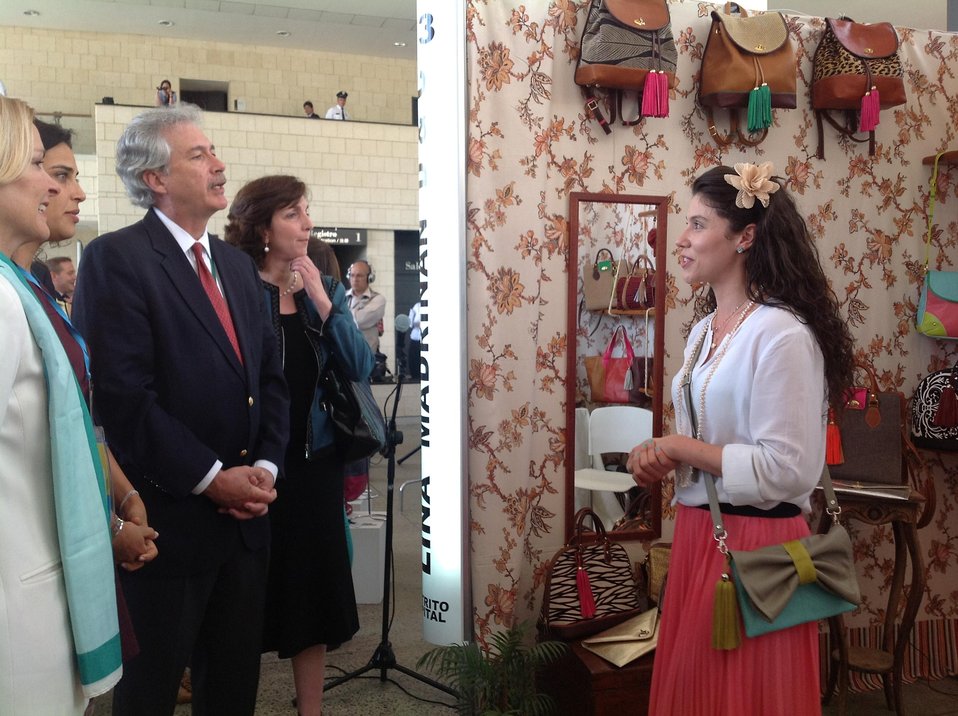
Deputy Secretary Burns and Assistant Secretary Jacobson Visit the WEAmericas Entrepreneurial Fair

Deputy Secretary of State William Burns and Assistant Secretary of State for Western Hemisphere Affairs Roberta Jacobson peruse the wares at the WEAmericas entrepreneurial fair in Cali, Colombia, October 23, 2012.